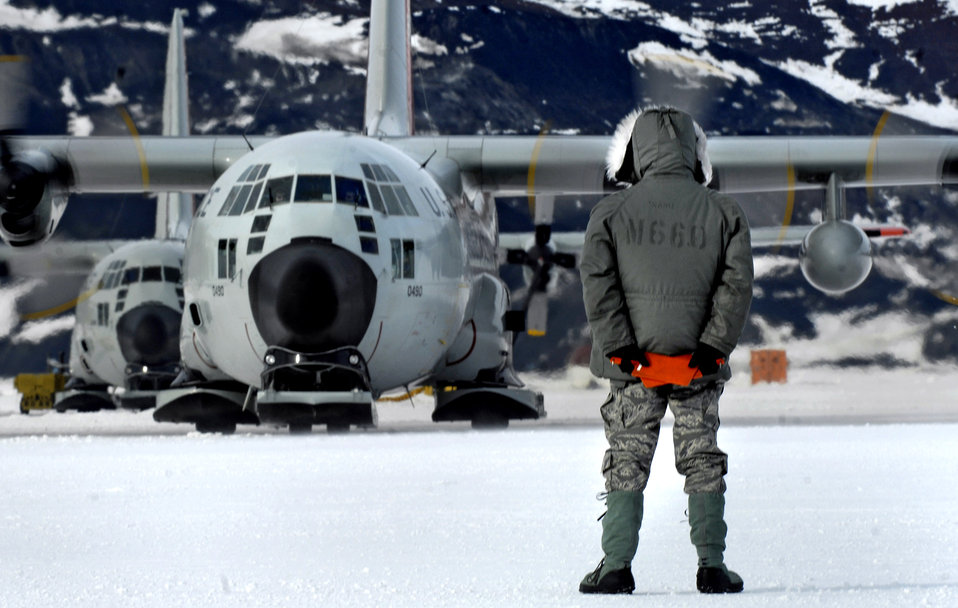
There's a chill in the air

Tech. Sgt. Kevin Call waits to marshal a ski-equipped LC-130 Hercules near McMurdo Station, Antarctica, Nov. 26 during Operation Deep Freeze, a unique joint and total force mission that supports the National Science Foundation and U.S. Antarctic Program.